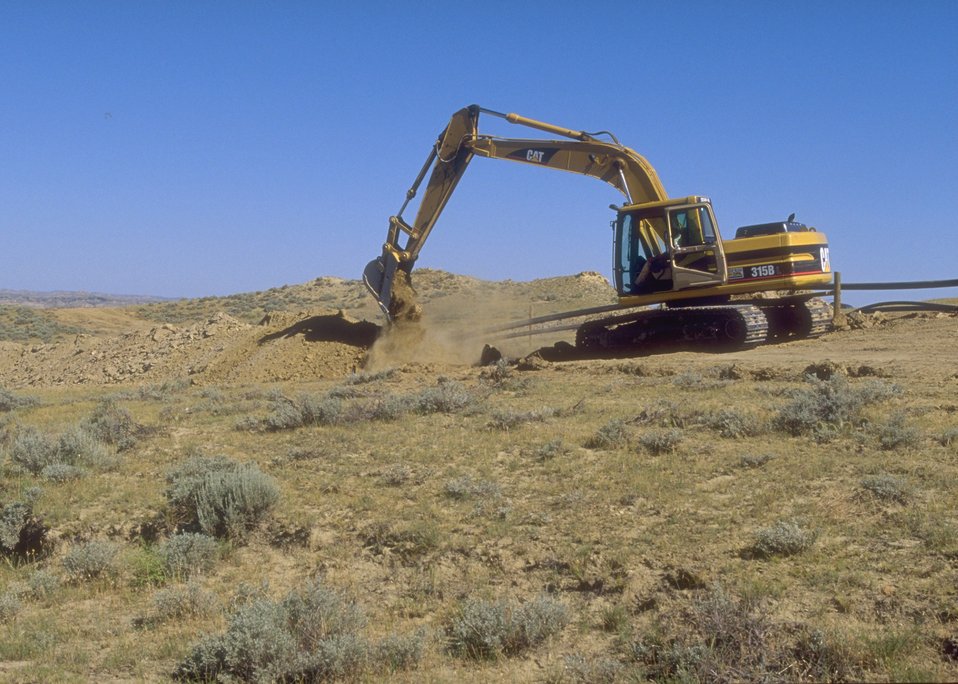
Construction for coal bed methane development, Buffalo Field Office.